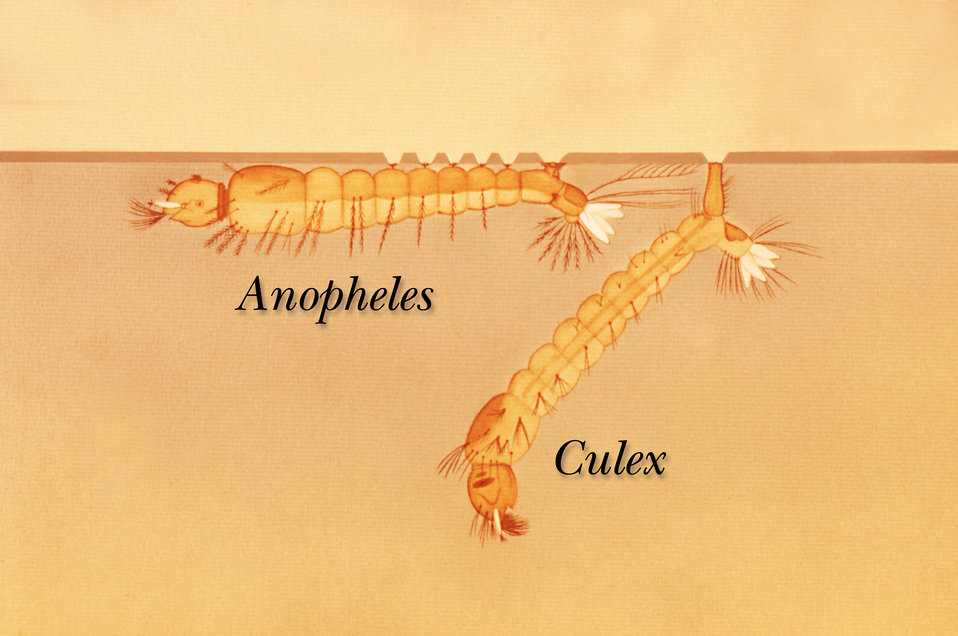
An illustration from the lateral view showing an Anopheles and Culex mosquito larva in water.